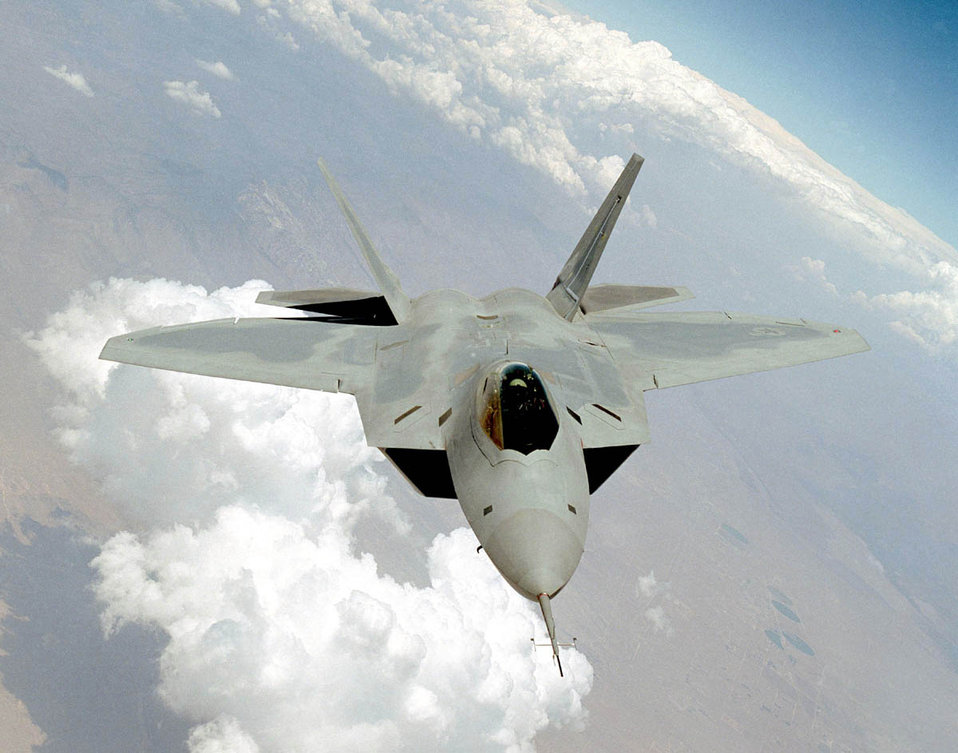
F/A-22 Raptor

EDWARDS AIR FORCE BASE, Calif. -- The F/A-22 Raptor passed the 400-flight-hour mark here recently. Since the summer of 1998, the Edwards F/A-22 Combined Test Force has flown two aircraft during 183 evaluation missions. Raptors 4001 and 4002 have meet four out of five Department of Defense flight-test requirements for 1999. The last is expected to be met in December.